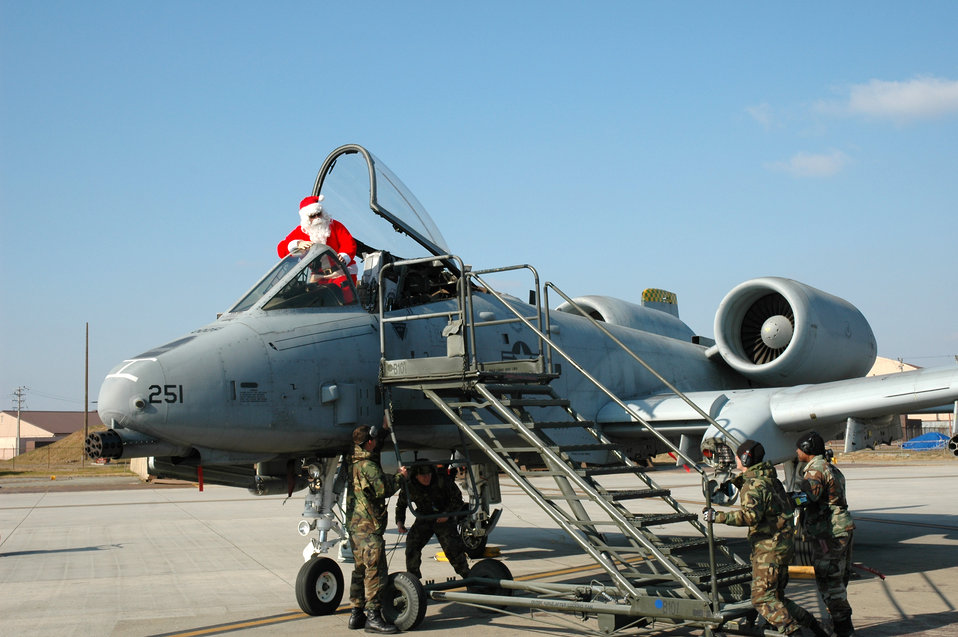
Santa jets into Osan

OSAN AIR BASE, South Korea -- Santa Claus arrives here aboard an A-10 Thunderbolt II recently. He arrived just in time to join a home-style feast with more than 200 Airmen of the 25th Fighter Squadron and 51st Aircraft Maintenance Squadron.